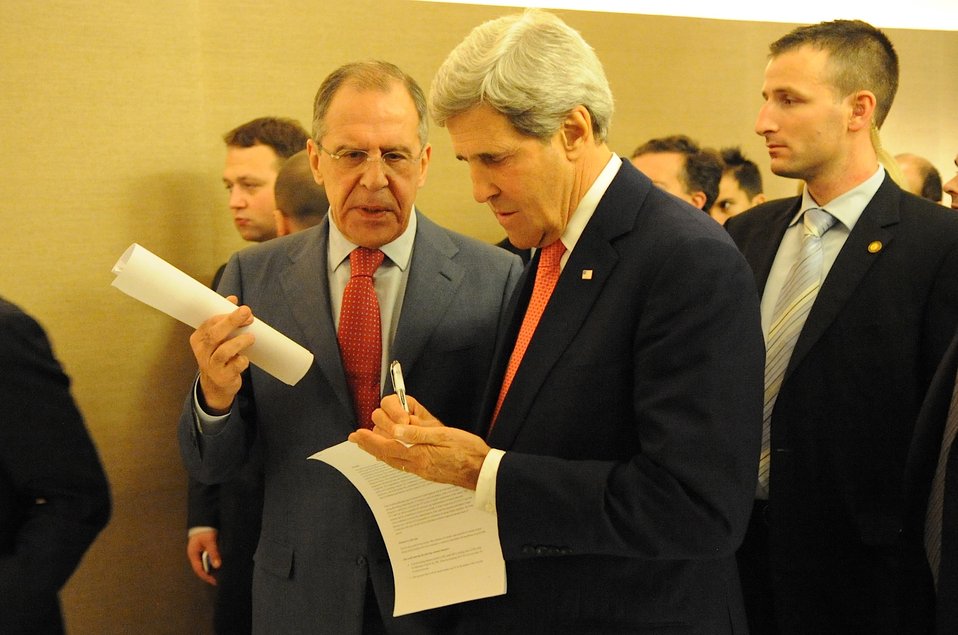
Secretary Kerry Speaks With Russian Foreign Minister Lavrov in Geneva

U.S. Secretary of State John Kerry takes notes on the back of a piece of paper as Russian Foreign Minister Sergey Lavrov speaks with him about policy matters after the P5 1 member nations concluded a nuclear deal with Iran in Geneva, Switzerland, on November 24, 2013.